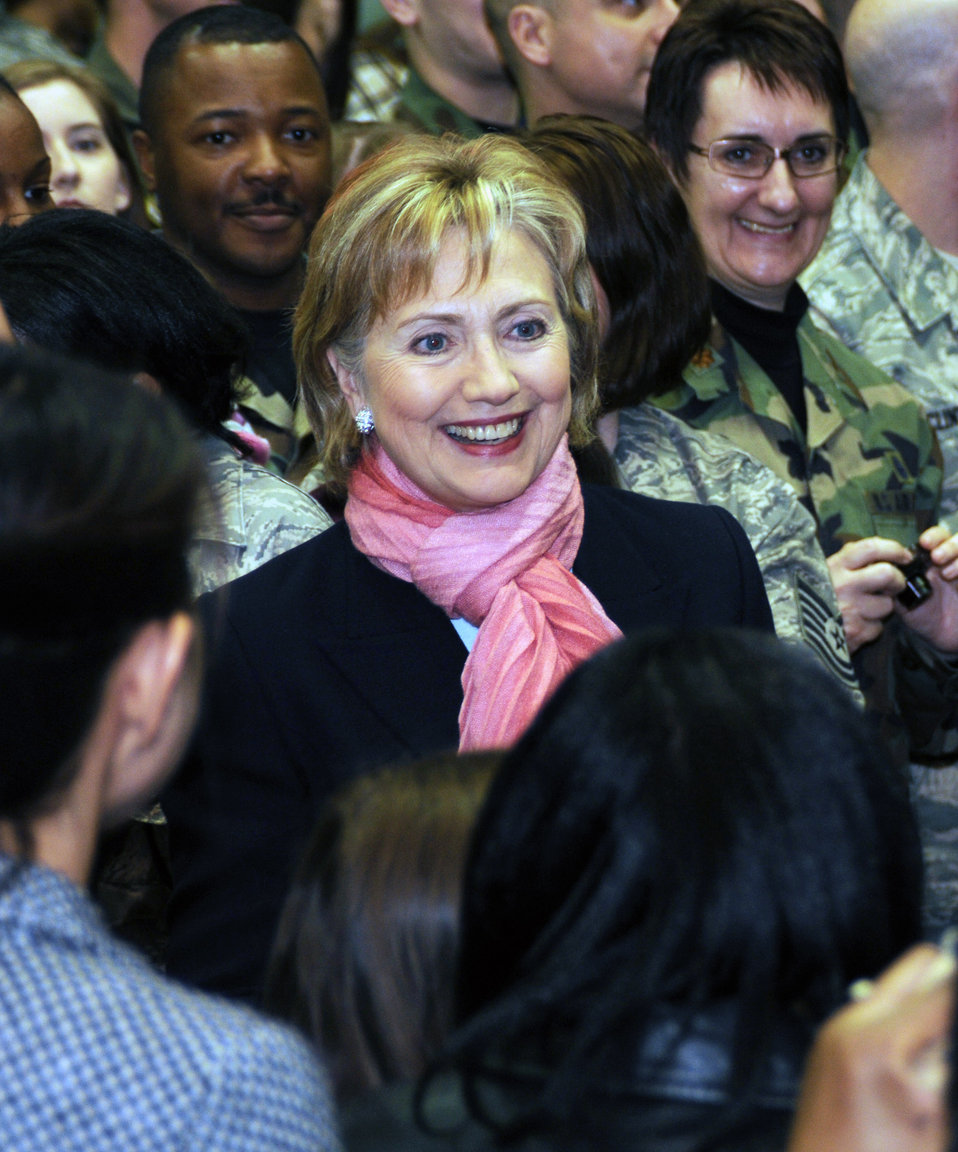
Secretary of state visits Yokota

Secretary of State Hillary Clinton greets military members and their families Feb. 22 at Yokota Air Base, Japan. She took the opportunity to visit during a refueling stop there on her way back to Washington D.C.